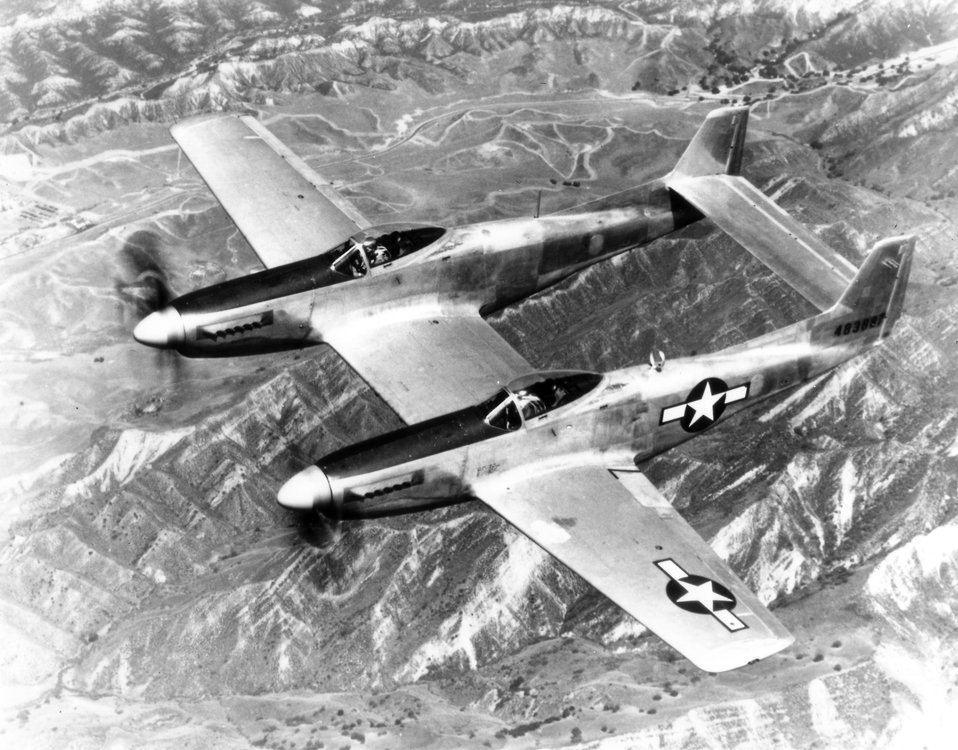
NORTH AMERCIAN P-82

1940's -- NORTH AMERCIAN P-82, The Army Air Forces'